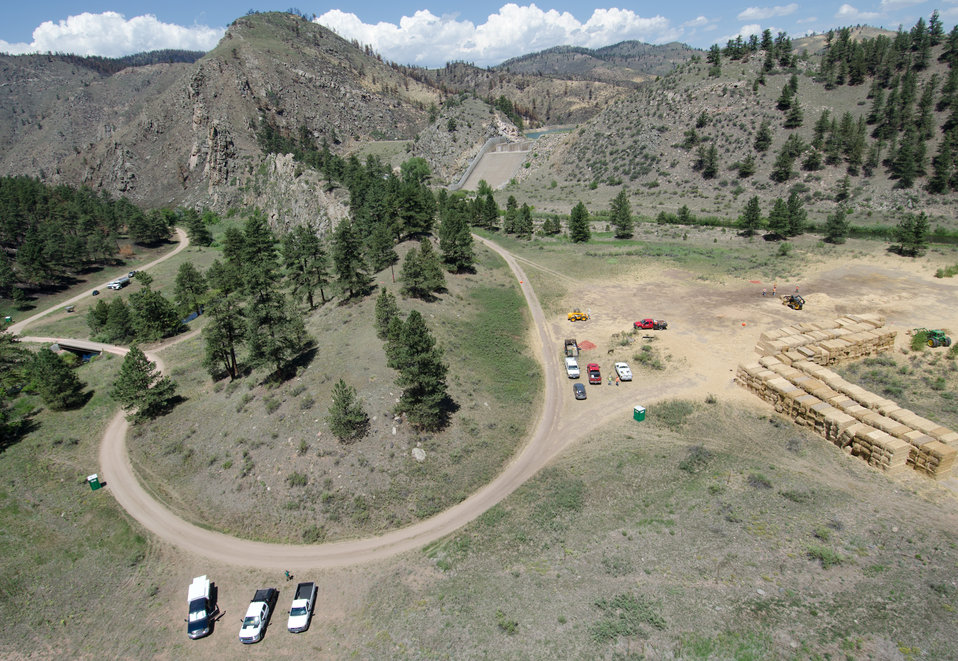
Helicopter flight operations center at the foot of the Seaman Reservoir spillway, on Friday, July 20, 2012, near Fort Collins, Colorado. Helicopters are able to refuel and provide pilot rest at landing zones on the left and lower left. Helicopters will hover over the pick-up point with 100-150-foot cables below them hold and release loads of certified straw weighing 1,400 – 2,000 pounds. 4-person load crews and heavy equipment operators unloaded 1,000 pound straw bales from tractor trailer rigs, stack them near the pickup point, then bring the bales onto cargo nets, open then loosen and adjust the load on cargo nets for helicopters to lift and drop them onto barren, burned out tributary land, during the continuing aerial application of straw to mitigate soil and ash runoff from the mountainous terrain leading to Seaman Reservoir, drinking water resource for the City of Greeley. Forest service lands received straw, while private and other lands receive a seed mix and straw to promote ground cover plant growth on ash-covered lands. In total, 1,800 tons of straw will be applied during the 14-day operation. One quarter of the cost was paid by the City of Greeley and the U.S. Department of Agriculture funded the remainder. The Hewlett Gulch Fire was started by a camper’s alcohol stove, on May 14, at the saddle of a picturesque mountain ridge along the Hewlett Gulch Trail of Poudre Canyon, in the Roosevelt National Forest, 60 miles north of Denver. At it’s more than 400 firefighters were battling fires being pushed by 50 mph winds that helped blacken over 12-square-miles of dry ground cover, brush and trees. Many of the trees were already dead and tinder dry from beetle-kill. The water in the reservoir remains clean and clear, while downstream water flow has gone from famous Colorado clear water to nearly black flows of water heavily laden with ash, silt, and burnt debris that recent thunderstorms have already washed down from the mountainsides.